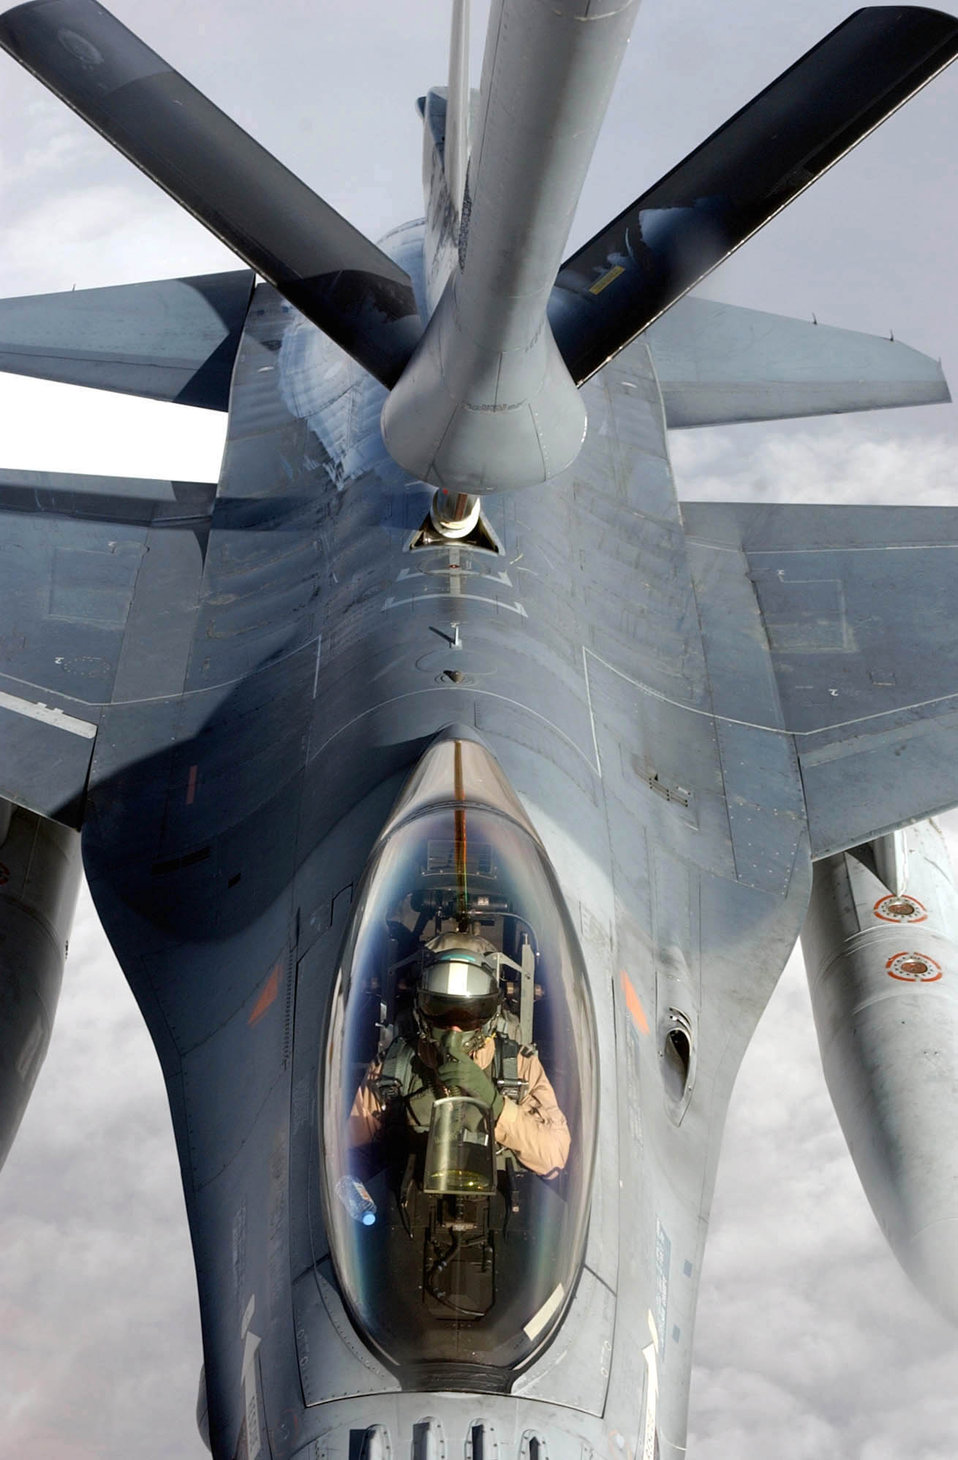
Falcon refueling

OPERATION ENDURING FREEDOM -- An unidentified F-16 pilot from the Netherlands prepares his aircraft to take on fuel during an air refueling mission with a KC-135 Stratotanker. Aboard the tanker was an all-female crew from the 376th Expeditionary Air Refueling Squadron at Ganci Air Base, Kyrgyzstan.